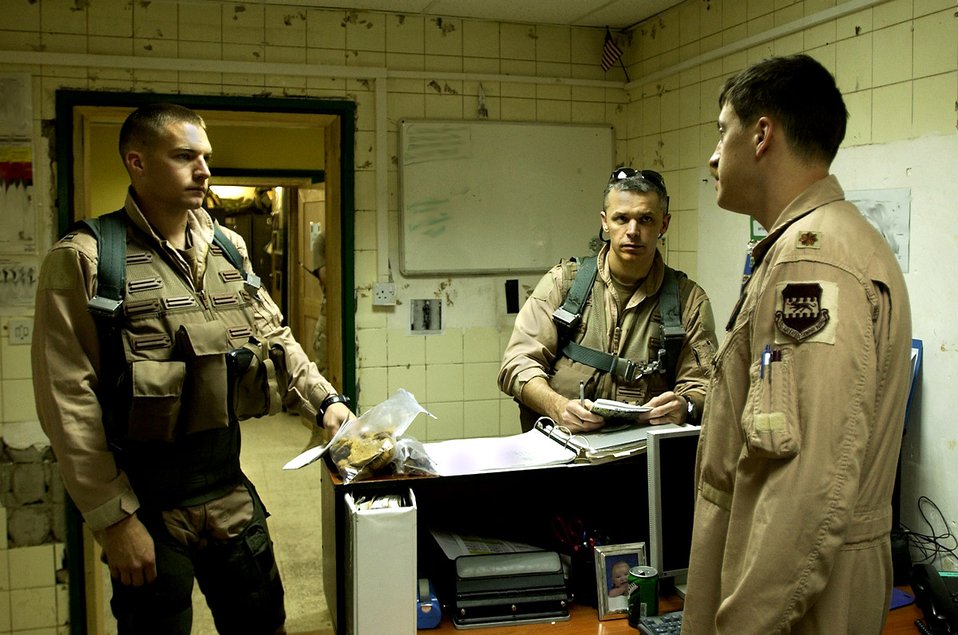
Operation Iraqi Freedom

Capt. Bart Wilbanks receives a F-16 pre-flight briefing before an Operation Iraqi Freedom mission at Balad Air Base, Iraq, November 2005. Captain Wilbanks is deployed from Aviano AB, Italy.